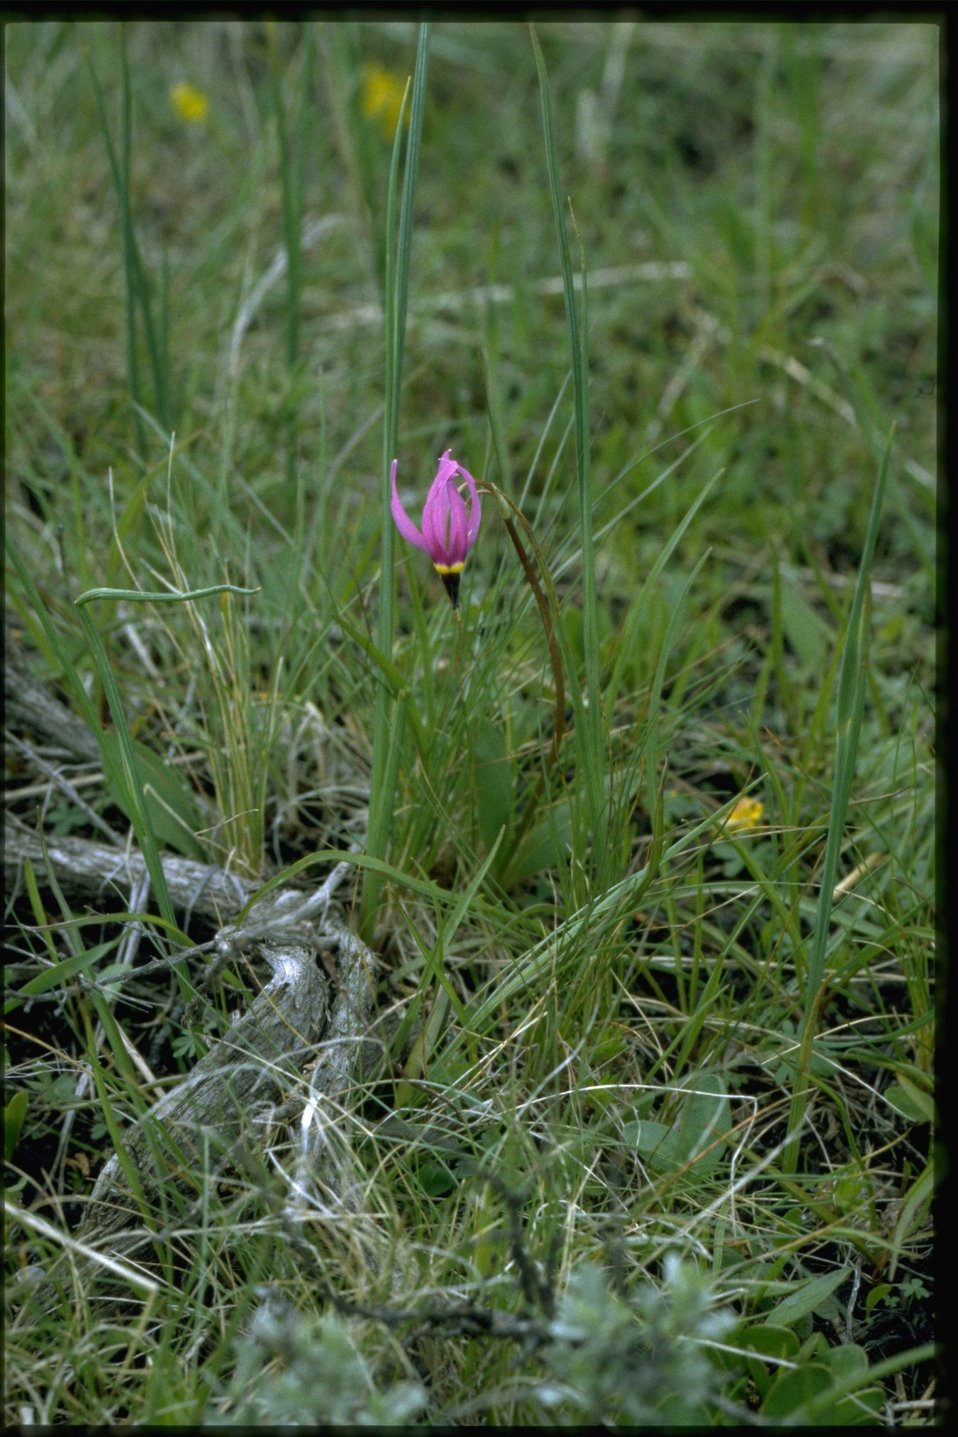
Farshot of Dark-Throat Shooting Star, Dodecatheon Pulchellum, wildflower.